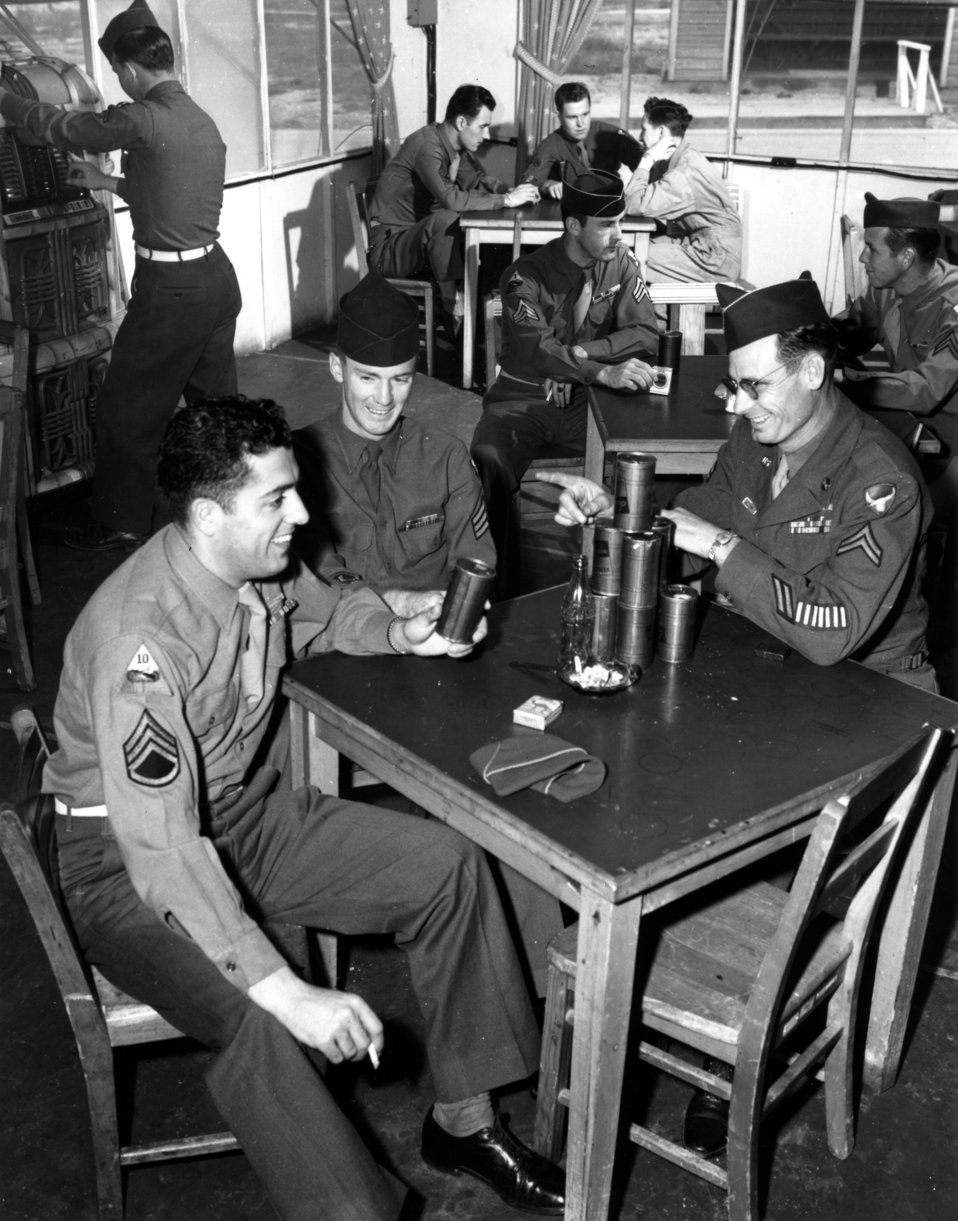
Army Activity at Oak Ridge